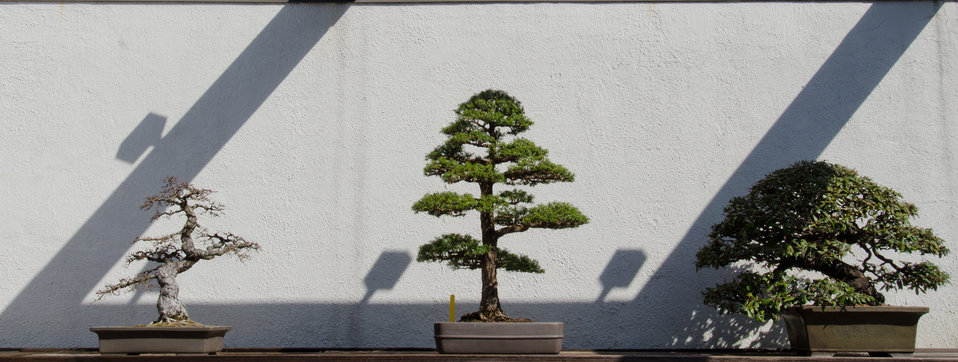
This bonsai tree (center) was donated by Princess Chichibu of Japan, a 1928 alum of Sidwell Friends School, whose second grade class visited the National Bonsai & Penjing Museum, in the U.S. Department of Agriculture, Agriculture Research Service's National Arboretum in Washington, DC, on March 29, 2011. The tree was received in early 1970's and was visited by the princess a year after being adopted by the museum. A robin had nested in the tree and she took it as a good sign.